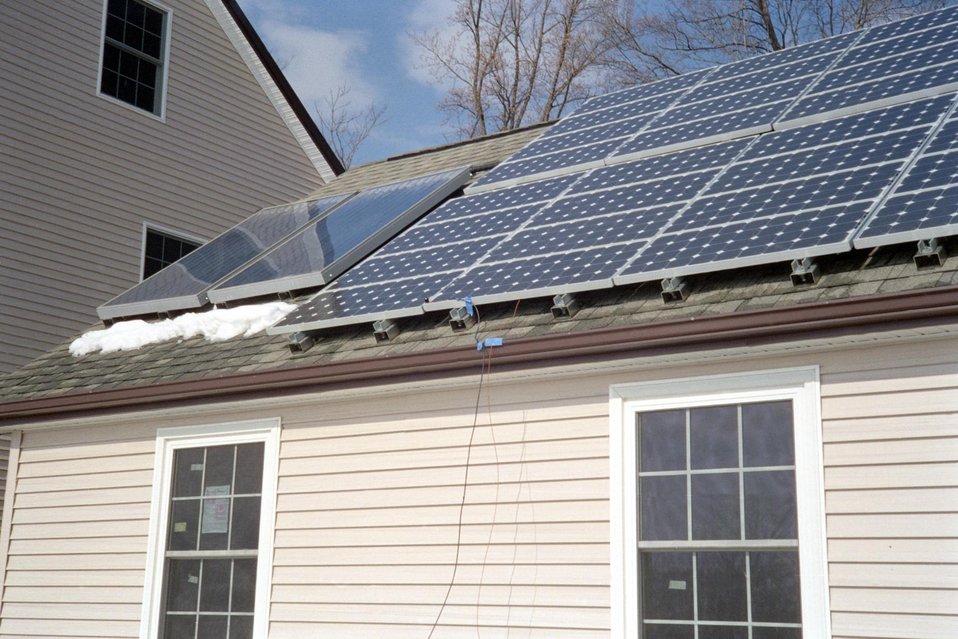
NREL SCIENTISTS PROVIDE ZERO ENERGY HOME FOR HOME BUILDERS.

WITH THE HELP OF SCIENTISTS AND ENGINEERS FROM DOE'S NATIONAL RENEWABLE ENERGY LABORATORY, PREMIER HOMES, CA, IS BUILDING A COMMUNITY OF HOMES IN SACRAMENTO THAT CAN SAVE 60% ON MONTHLY UTILITY BILLS. NREL IS WORKING WITH FOUR TEAMS IN CALIFORNIA, MARYLAND AND CONNECTICUT TO INTRODUCE DOE'S ZERO ENERGY HOMES CONCEPT INTO THE SINGLE FAMILY NEW HOME CONSTRUCTION INDUSTRY.